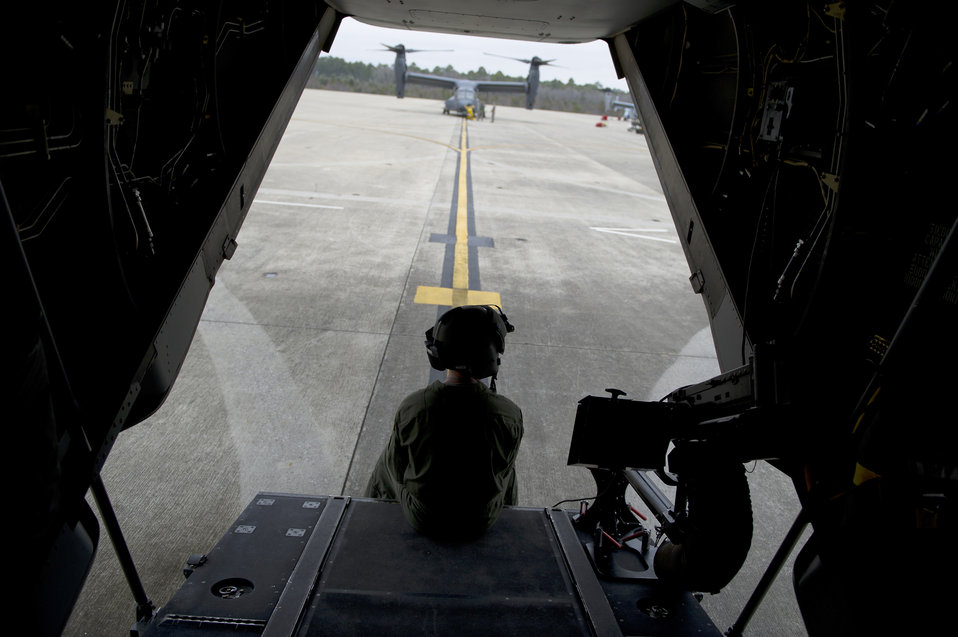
Osprey training mission

Master Sgt. John Rhoten waits after a preflight check of a CV-22 Osprey before a training mission Feb. 1, 2011, at Hurlburt Field, Fla. Sergeant Rhoten is a flight engineer assigned to the 8th Special Operations Squadron.